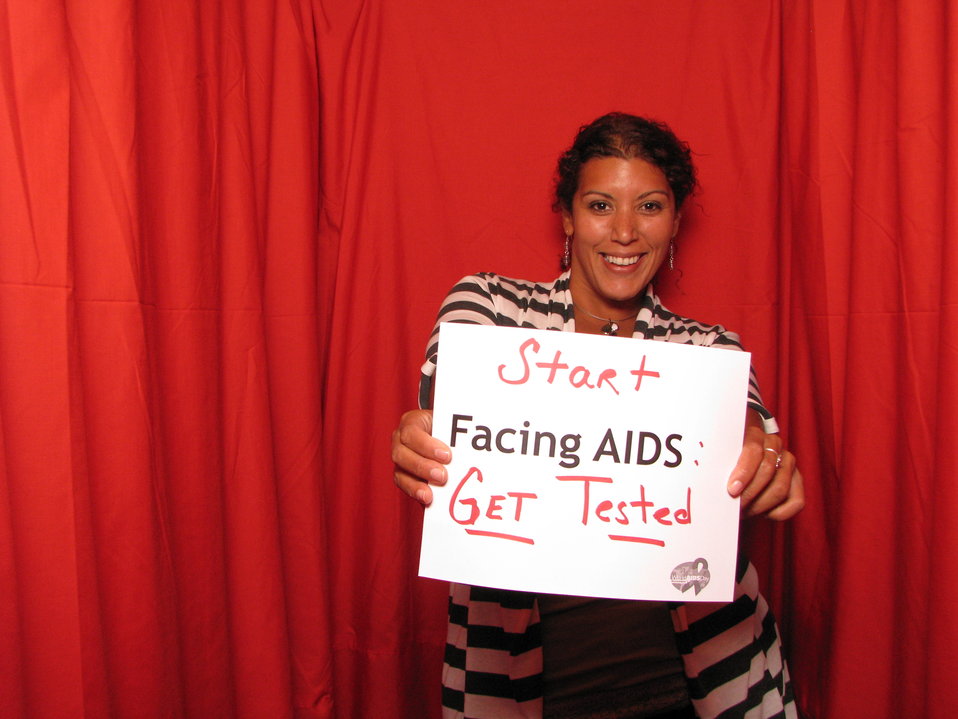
Start FACING AIDS: Get Tested.

From the AIDS.gov photo booth at the U.S. Conference on AIDS, September 2010 (Orlando, FL).